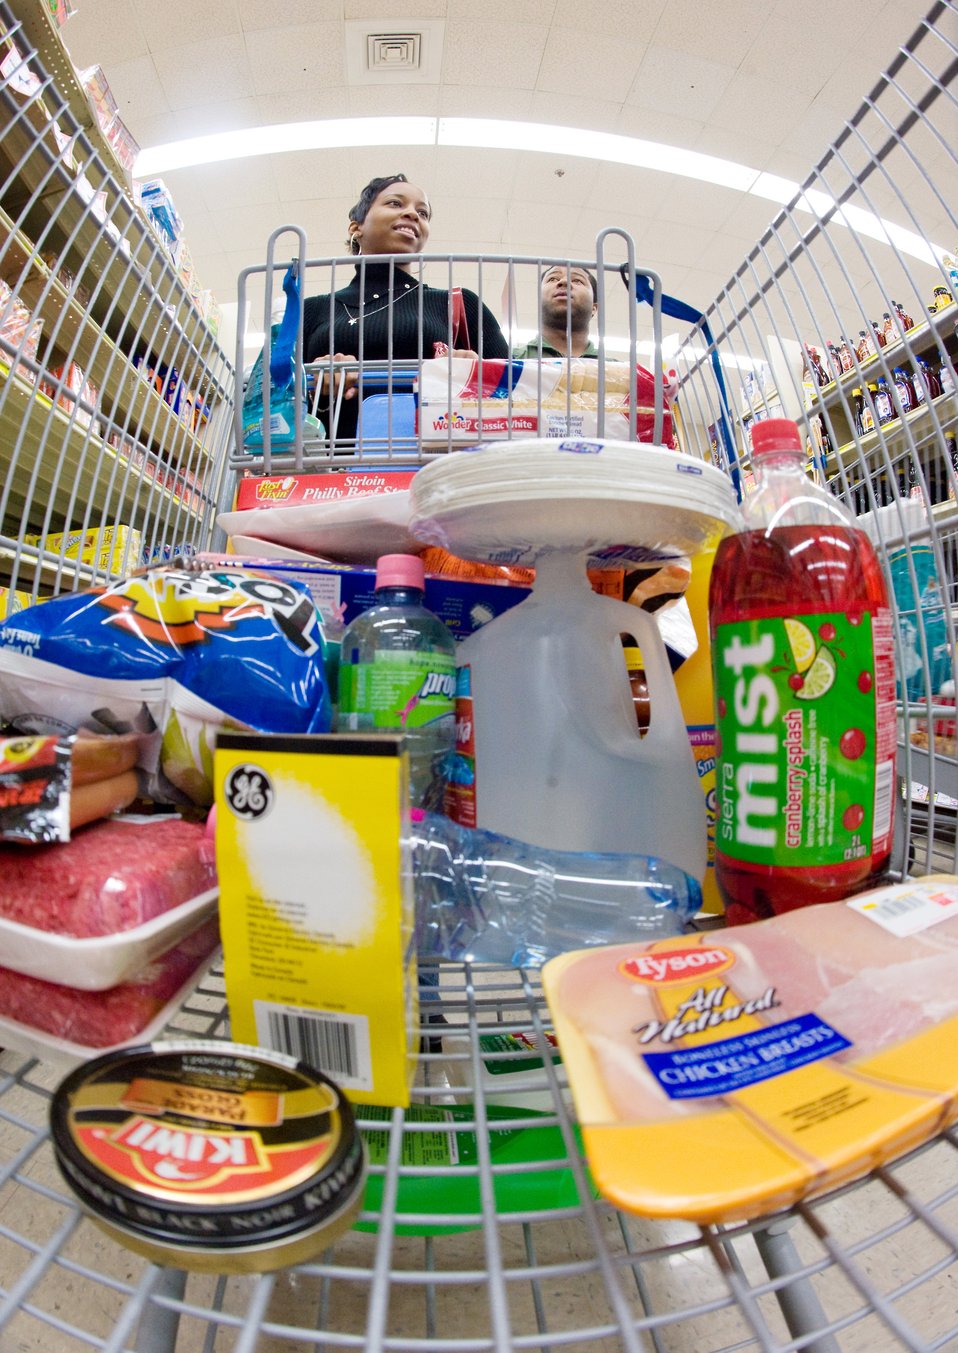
Where's the cheese?

New to Offutt Air Force Base, Neb, newlywed Serena Pulley learns the layout of the base commissary while shopping for needed items. Her husband is assigned to the 38th Reconnaissance Squadron based at Offutt.